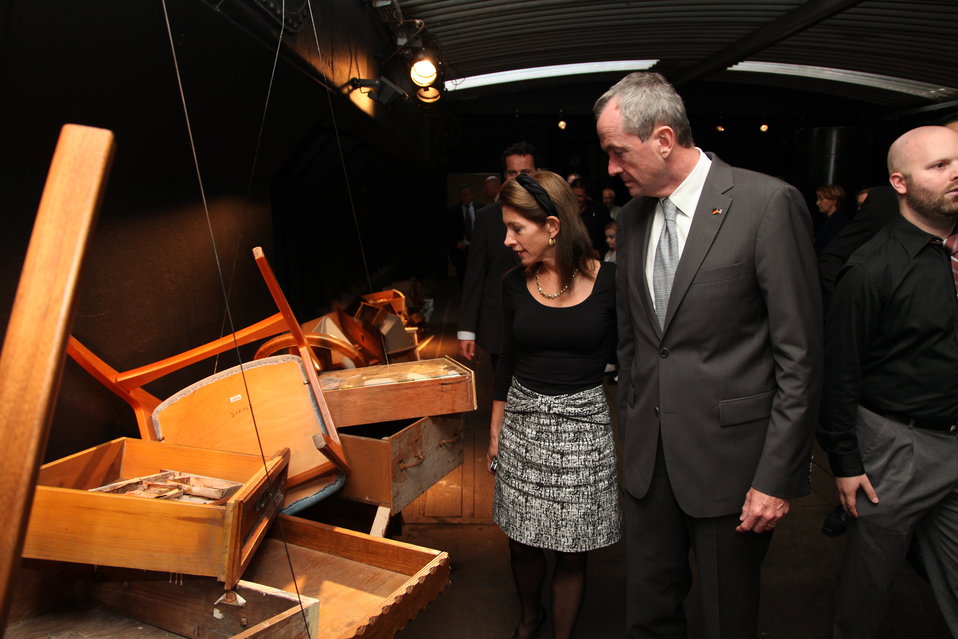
Ambassador Murphy and His Wife Tour the 'Floodwall' Exhibit

U.S. Ambassador to Germany Philip D. Murphy and his wife view the Floodwall exhibit, which was installed on the 1920s “Kurier” ship moored at three locations on the Spree and which presented the Berlin public with an above and below-deck installation murmuring with the voices and stories from New Orleans, Louisiana. The exhibit took place in Berlin, Germany, from September 10, 2010, to October 15, 2010.